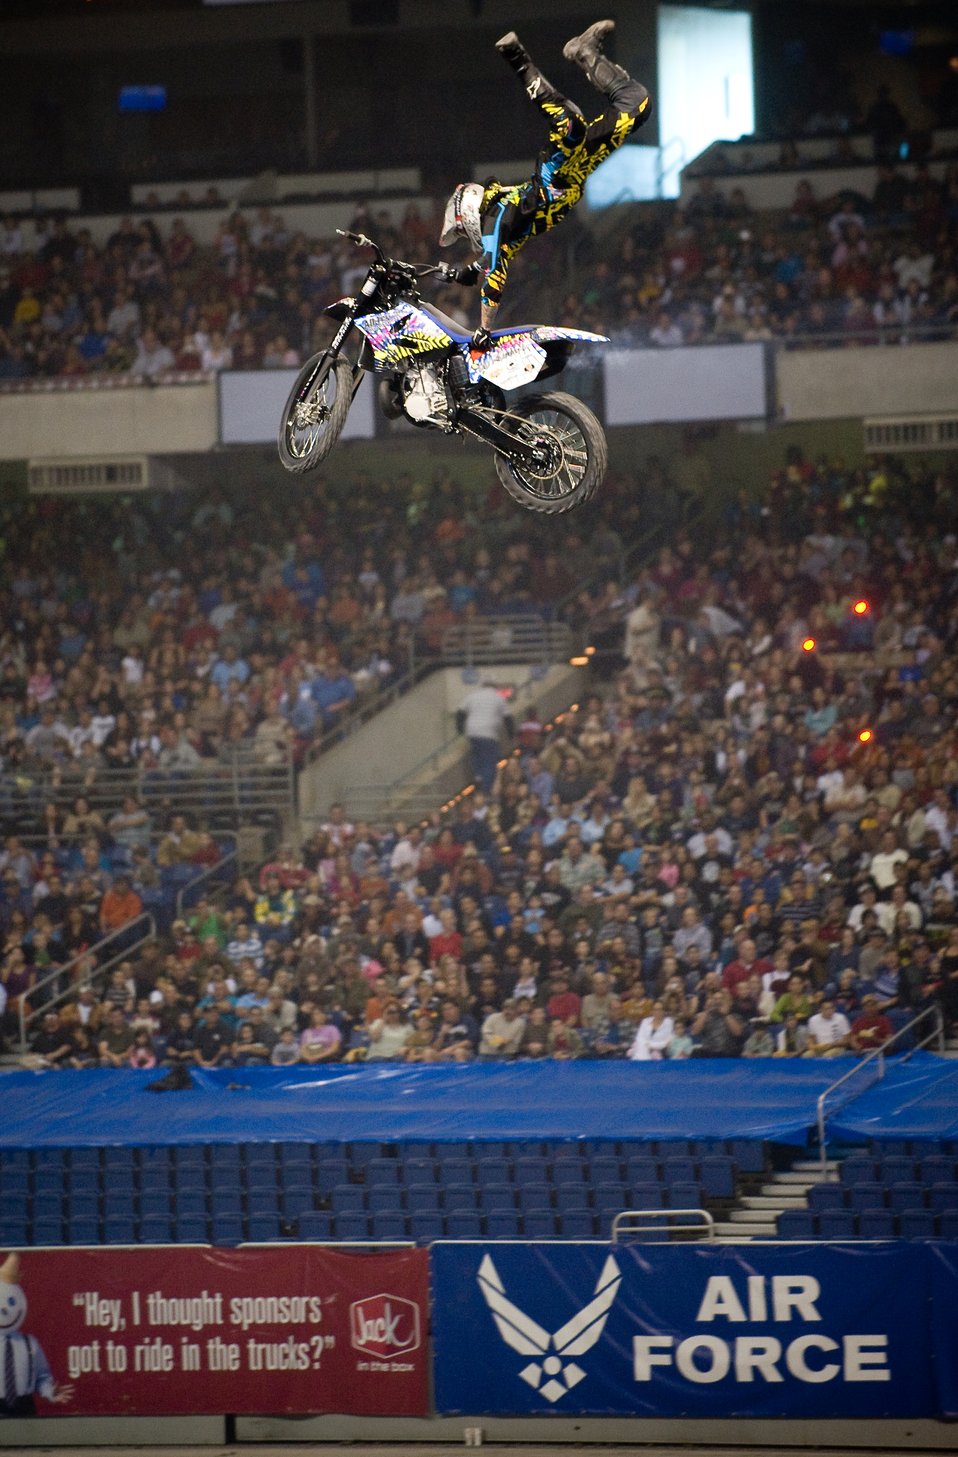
AF flies high at Monster Jam

Freestyle motocross was demonstrated at the 2009 Monster Jam event at the Alamodome in San Antonio Jan 11.